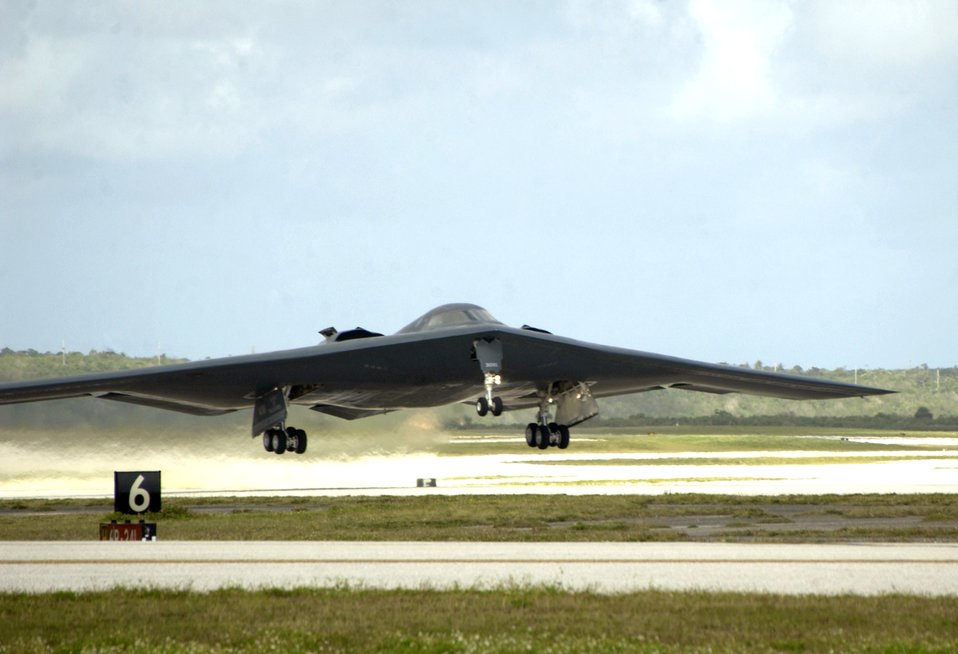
The

ANDERSEN AIR FORCE BASE, Guam -- A B-2 Spirit stealth bomber takes off from here March 30. The B-2 Spirits and more than 270 personnel from the 393rd Bomb Squadron at Whiteman Air Force Base, Mo., are deployed here in support of Pacific Command's continuous bomber presence in the Asia-Pacific region.